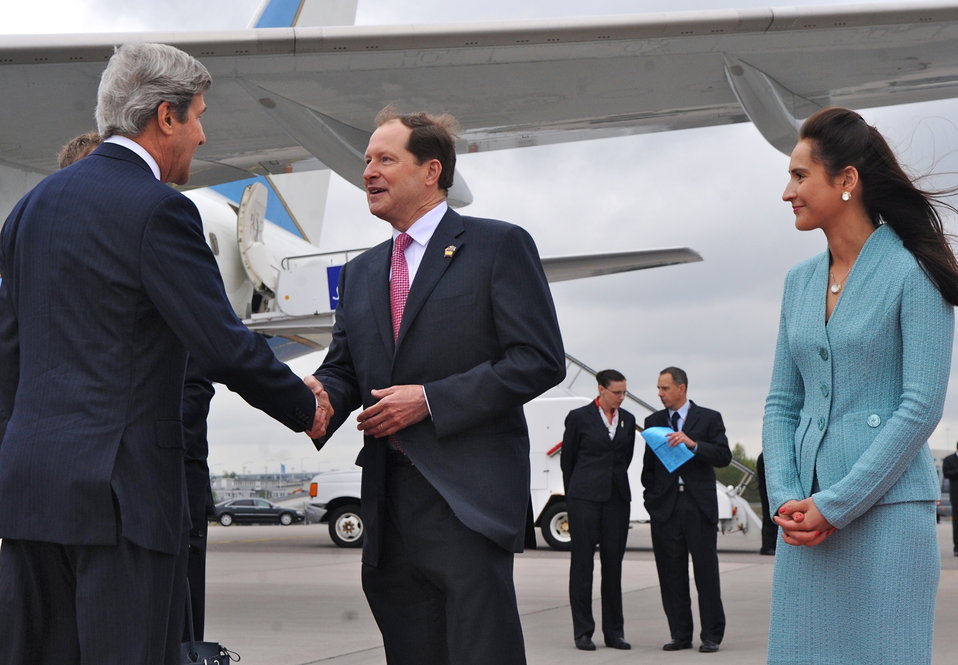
Secretary Kerry Arrives in Stockholm, Sweden

U.S. Secretary of State John Kerry is greeted by U.S. Ambassador to Sweden Mark Brzezinski and his wife upon arriving in Stockholm, Sweden, on May 14, 2013.